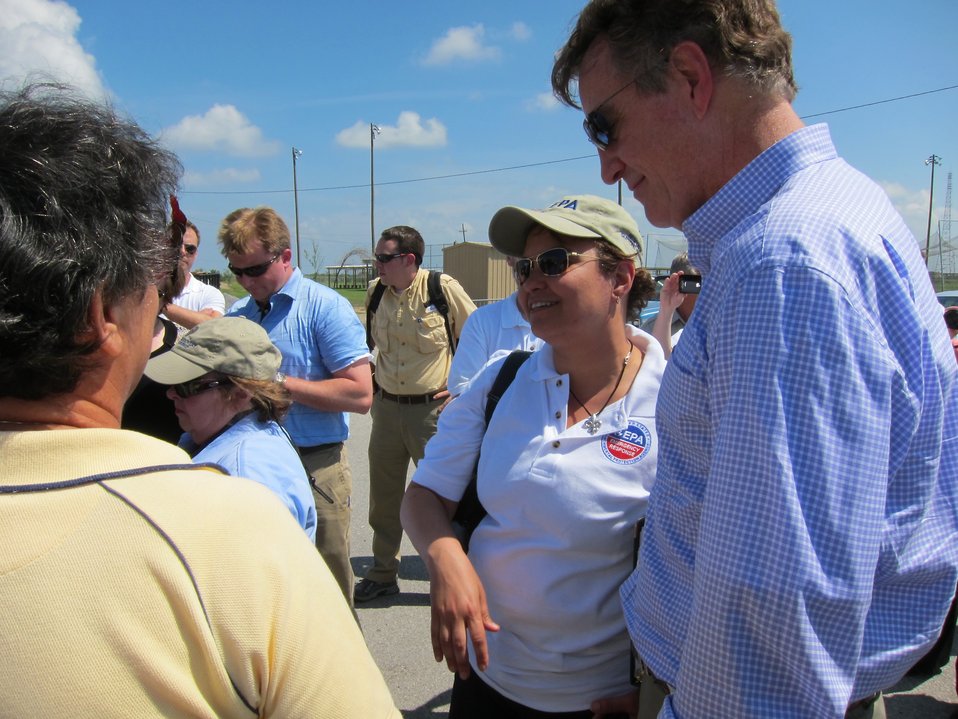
lpj-strickland